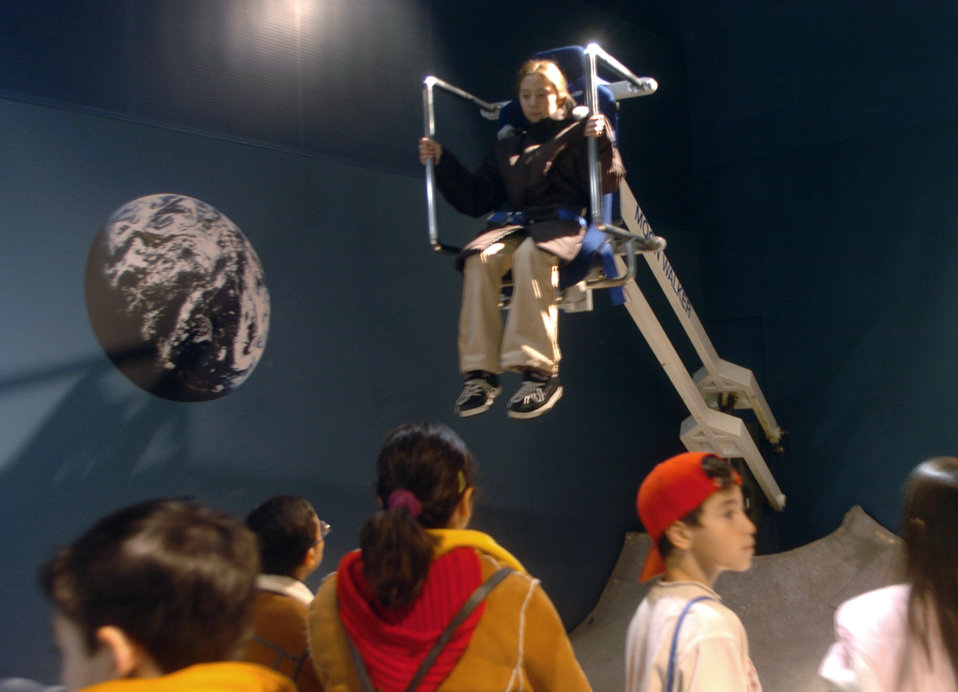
To the moon!

TOKYO -- Erika Strohecker experiences the "Moonwalker" at Tamarokuto Science Center here during a field trip Feb. 3. The "Moonwalker" simulates the weightless atmosphere on the moon. The center offers a wide variety of exhibitions about the sciences of living environment, earth, life, body, and space. Erika is a fifth-grader at nearby Yokota Air Base.